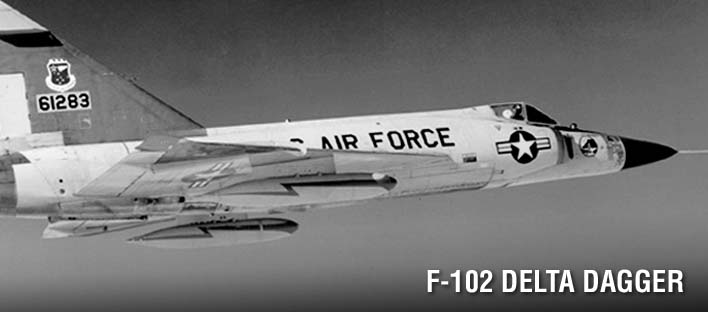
F-102 Delta Dagger, history spotlight graphic, U.S.